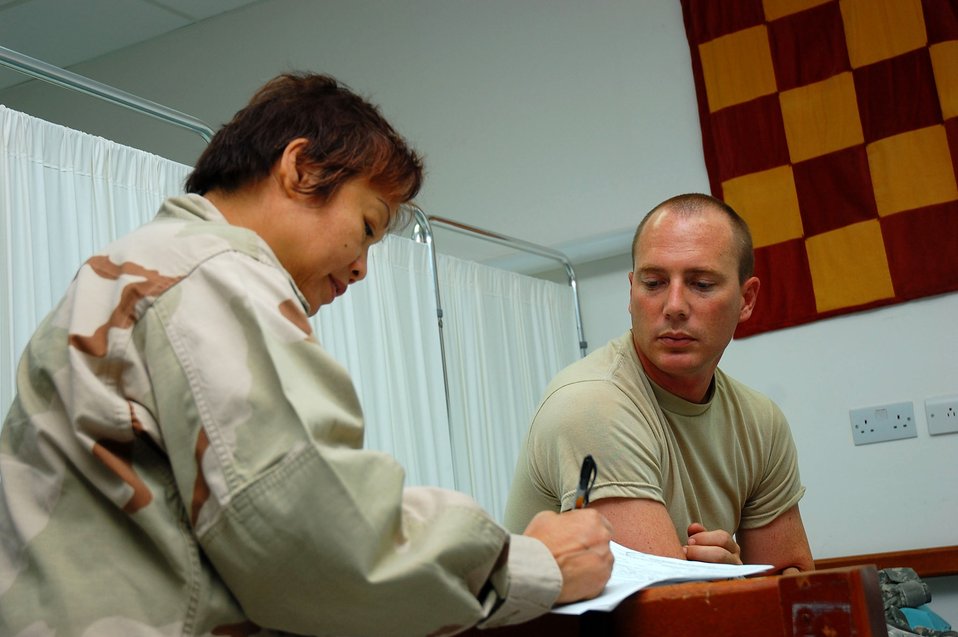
Airmen keep Soldiers, Marines in the fight

Maj. Edna Higa conducts a medical evaluation on Army patient Sgt. Scott Boomershire at the Contingency Aeromedical Staging Facility Sept. 24 in Southwest Asia. The CASF is a 24-hour medical holding and staging facility, which averages about 300 patients per month. Major Higa is a 386th Expeditionary Medical Group clinical nurse.